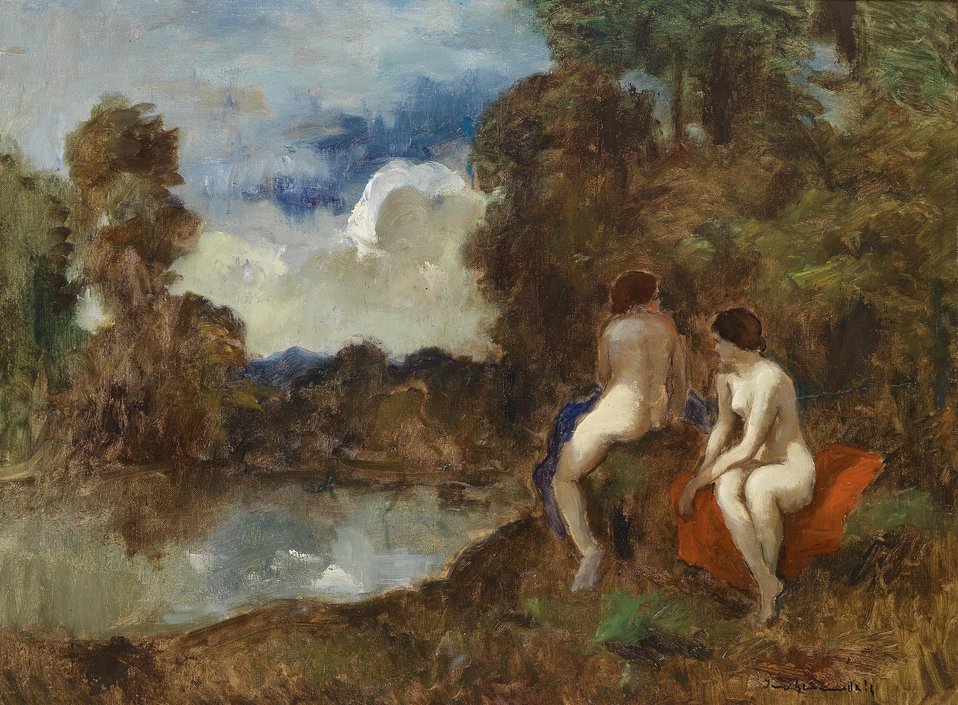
Bela Ivanyi-Grünwald Zwei Nackte am Teich